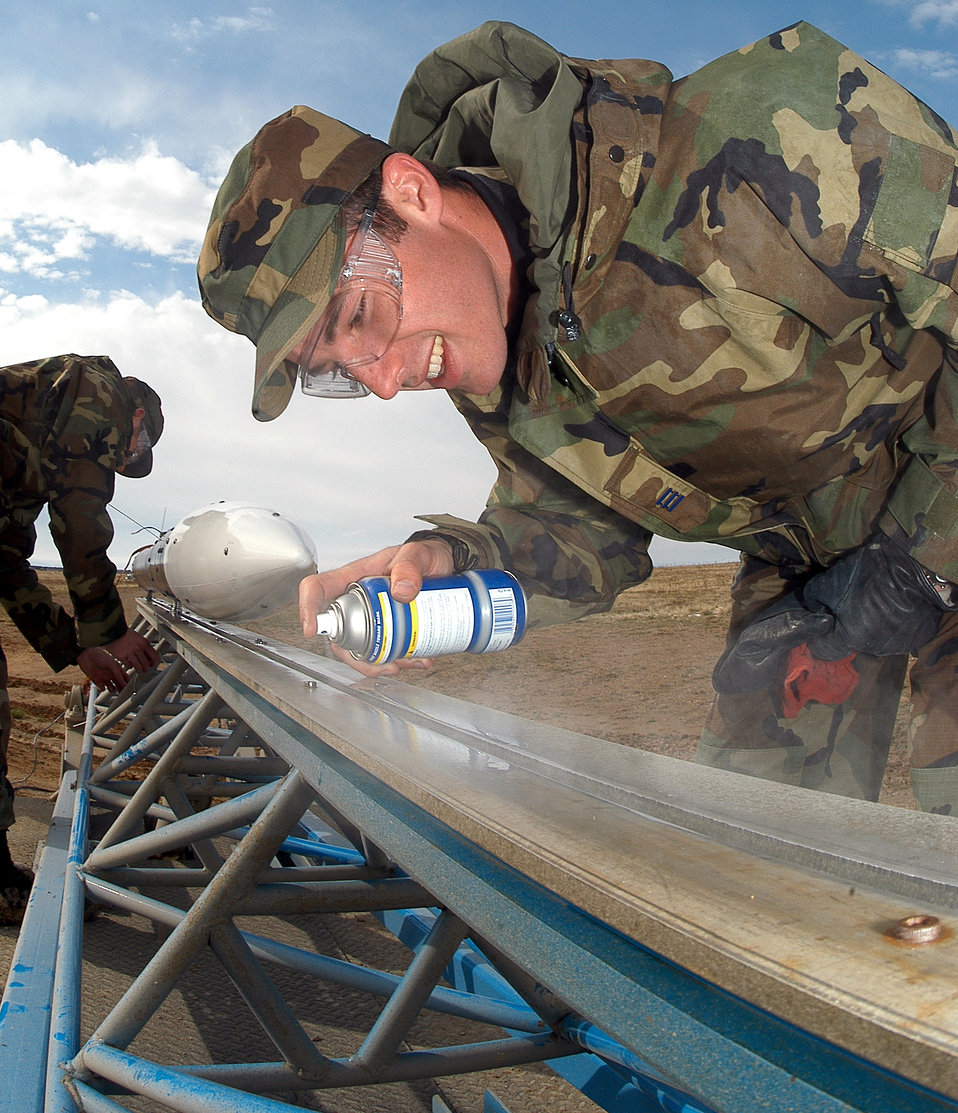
Rocket launch

FORT CARSON, Colo. -- Cadet 1st Class Chris Nations sprays lubricant on the launch track before the rocket he and 17 other cadets built for a class project is fired. U.S. Air Force Academy cadets taking Astronautical Engineering 452/453 Rocket Engineering classes completed their project April 25 by successfully firing the 11.5-foot tall, 7-inch diameter projectile from the Pinon Maneuver area here.